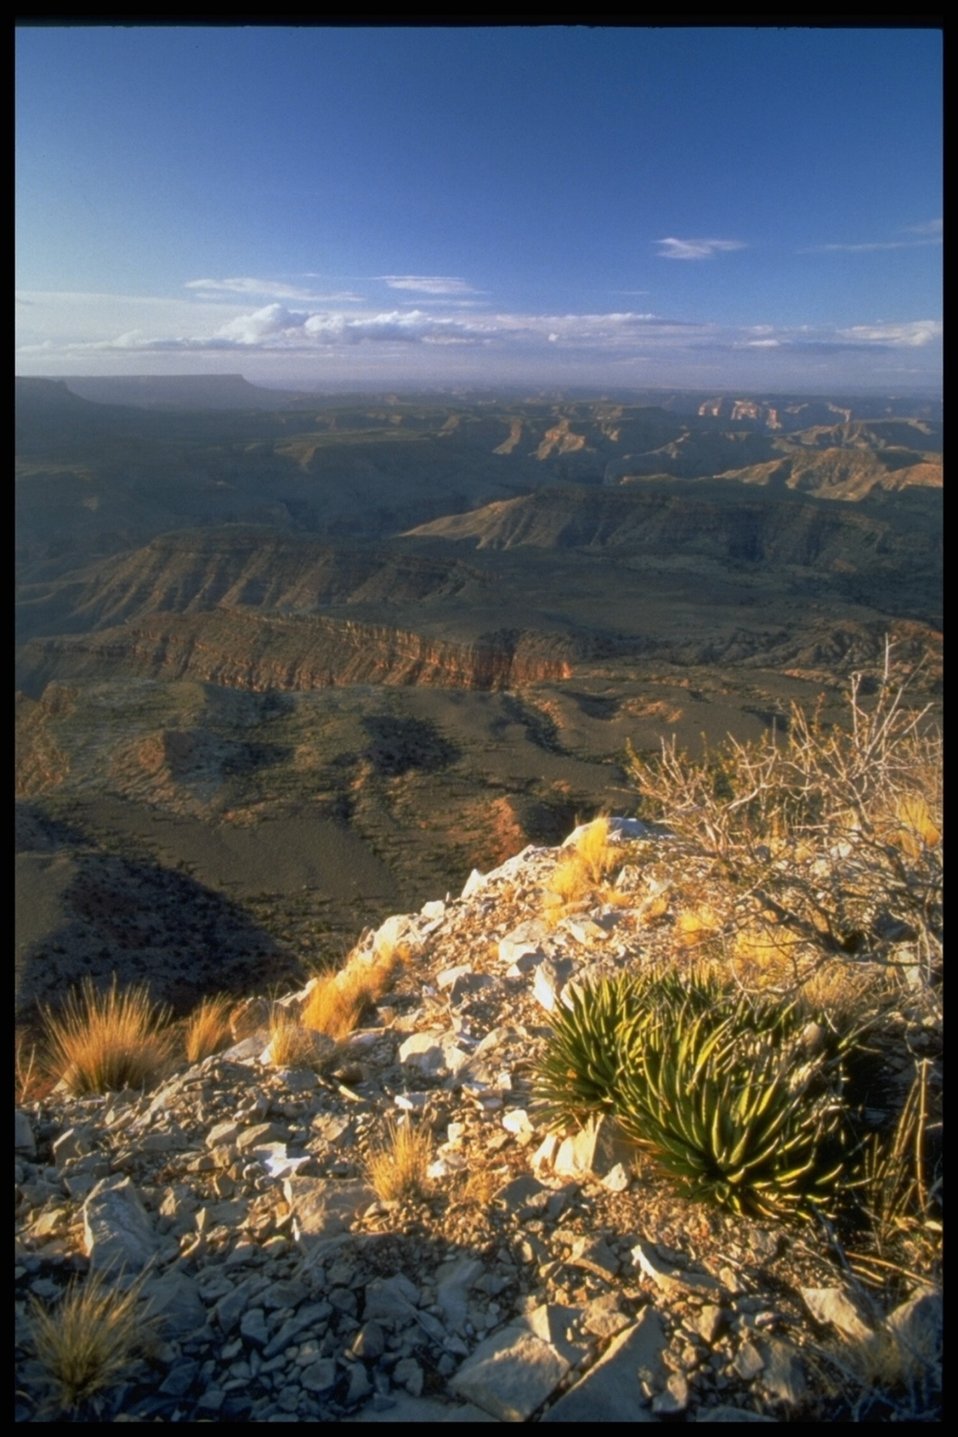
A view of the canyon in the Parashant National Monument.